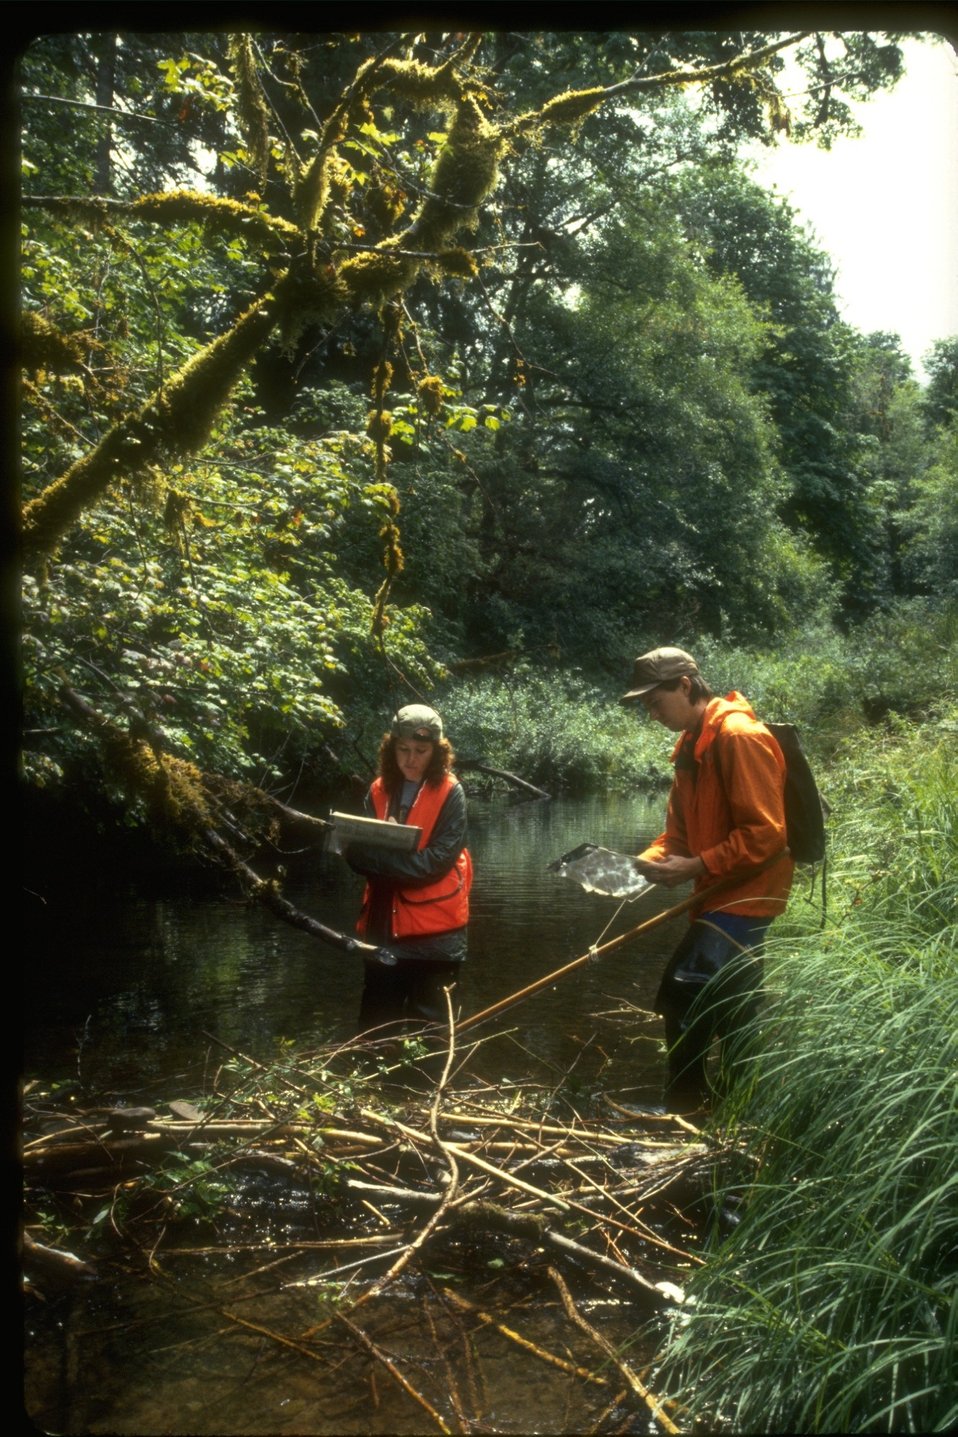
Volunteers working at a fishery.